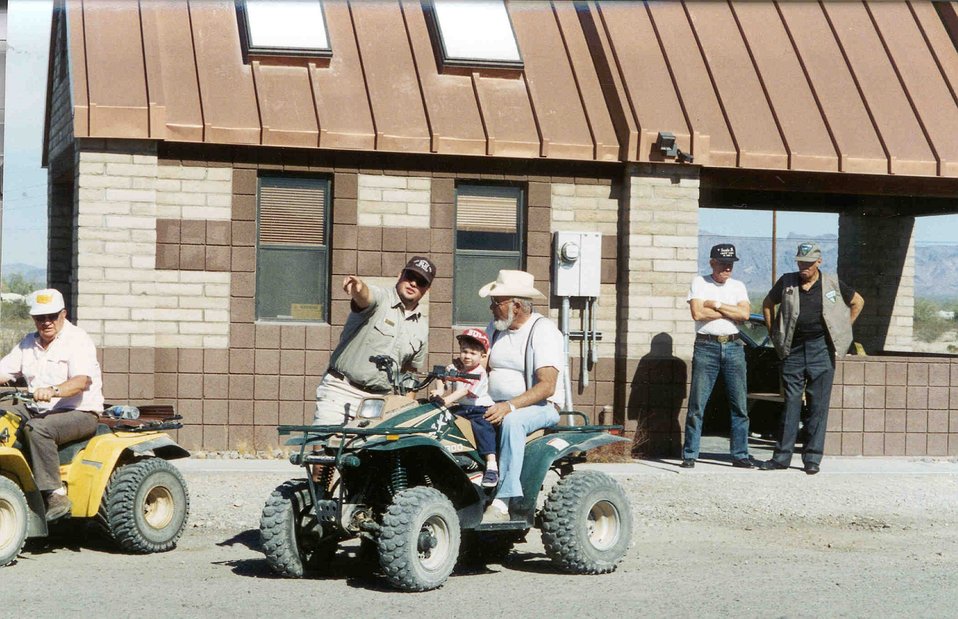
Park Ranger helping public at La Posa LTVA.